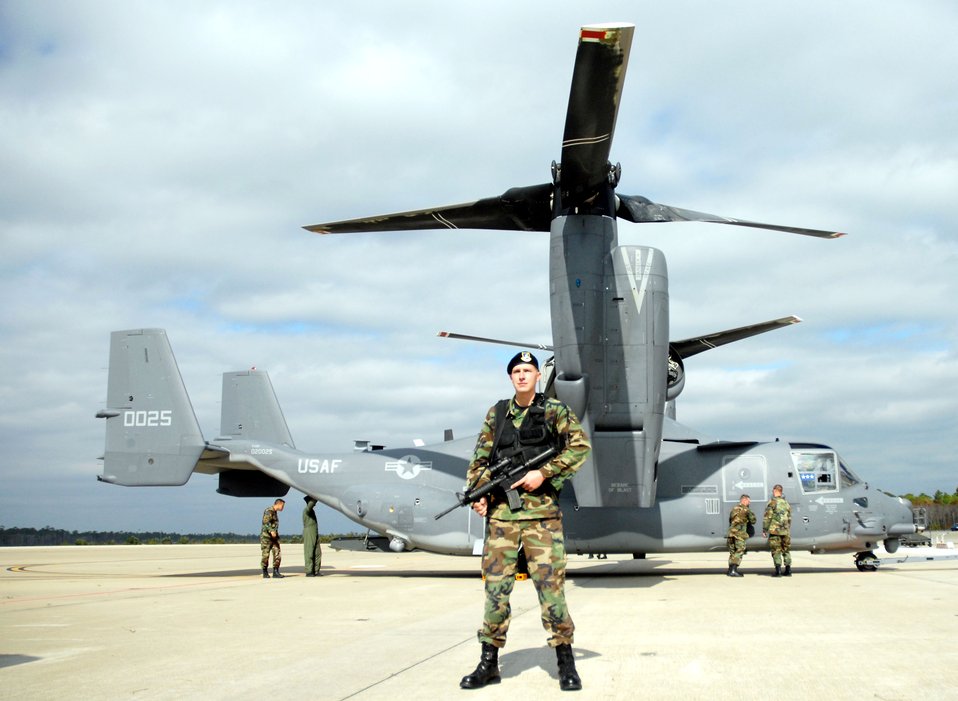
Heritage to horizons

Airman 1st Class Stephen Emminger, a security response team member with the 16th Security Forces Squadron, guards Air Force Special Operations Command's first operational CV-22 Osprey at Hurlburt Field, Fla., Nov. 6. The Osprey was flown to Hurlburt by Lt. Gen. Michael W. Wooley, AFSOC commander, as part of the command's Air Force 60th anniversary commemoration.